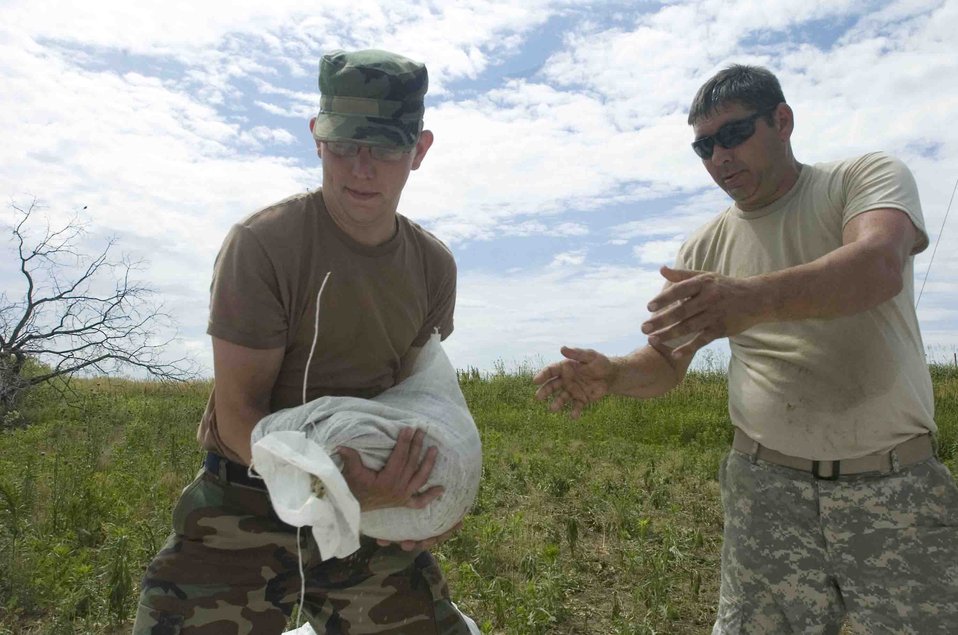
Missouri Air National Guard protects Winfield levee

Senior Airman Matt Strand (left) and Pfc. Marvin Hatton pass sandbags June 20 used to prevent erosion of a levee near Winfield, Mo. Airman Strand is assigned to the 131st Fighter Wing in St. Louis and Private Hatton is assigned to the 1140th Engineering Battalion in Cape Girardeau, Mo.